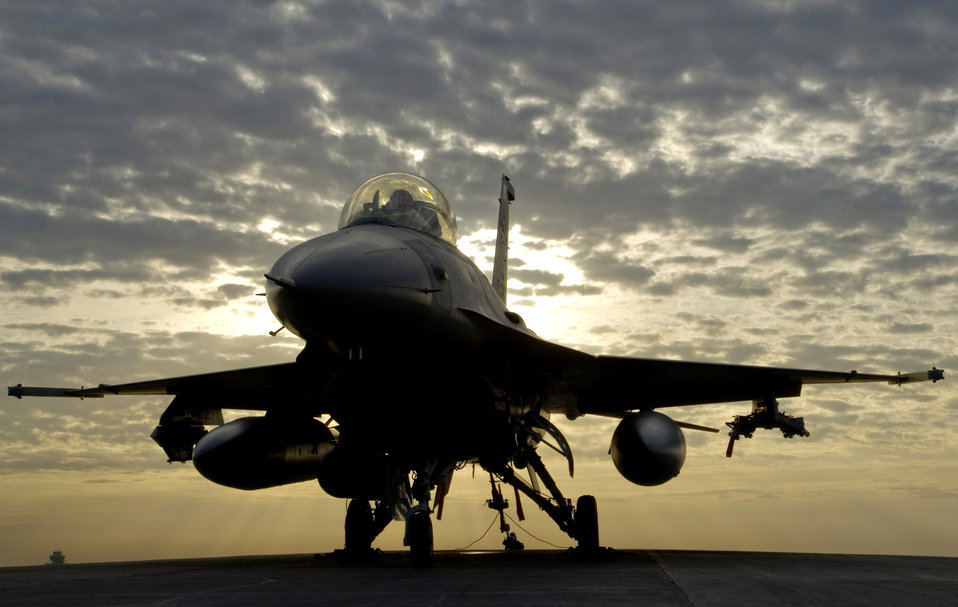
Air Guard F-16s fly air sovereignty alert missions

F-16 Fighting Falcons, like the one shown here, fly nearly all of the Air National Guard air sovereignty alert missions in the U.S.